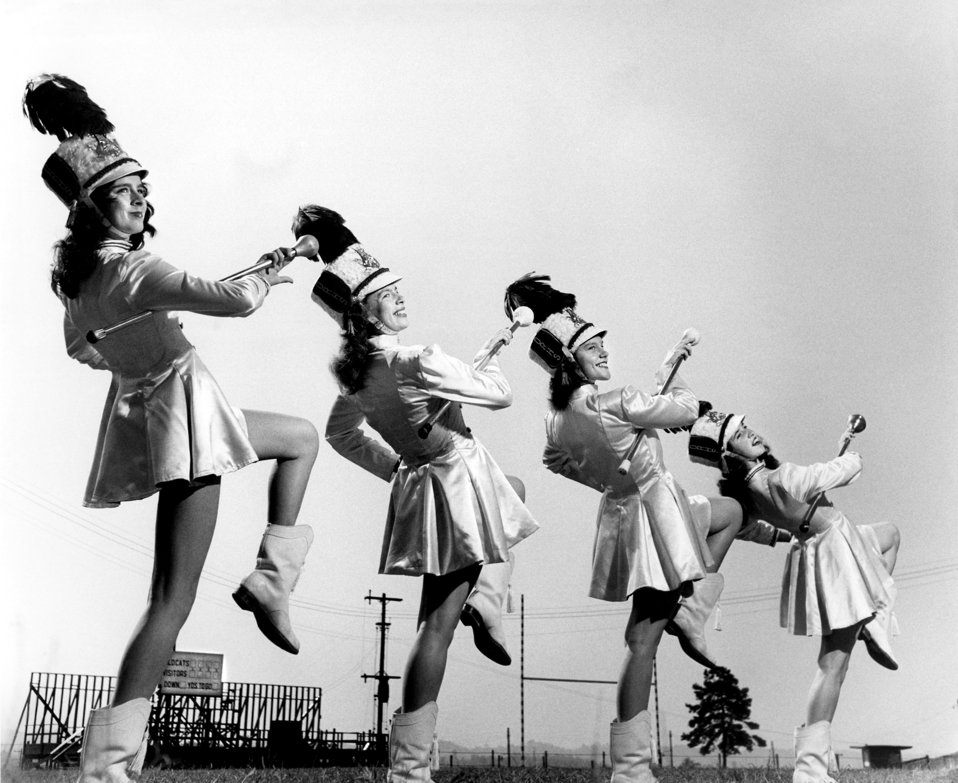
Oak Ridge High School Drum Majoretees

47-3782 DOE photo by Ed Westcott

Oak Ridge High School Drum Majoretees 1947